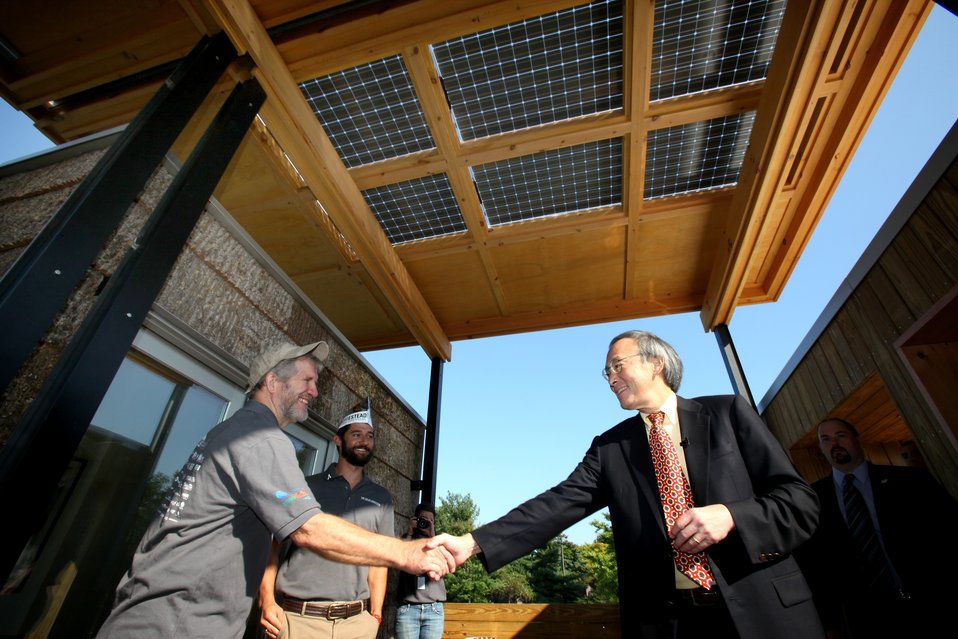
Energy Secretary Chu Visits Appalachian State University's Solar Decathlon House

U.S. Energy Secretary Steven Chu speaks with Jeffrey Tiller, left, Chair of the Technology and Environmental Design Department for Appalachian State University, and student team member, David Lee, second from left, as he tours the Appalachian State University house at the U.S. Department of Energy Solar Decathlon 2011 in Washington, D.C., Friday, Sept. 30, 2011.